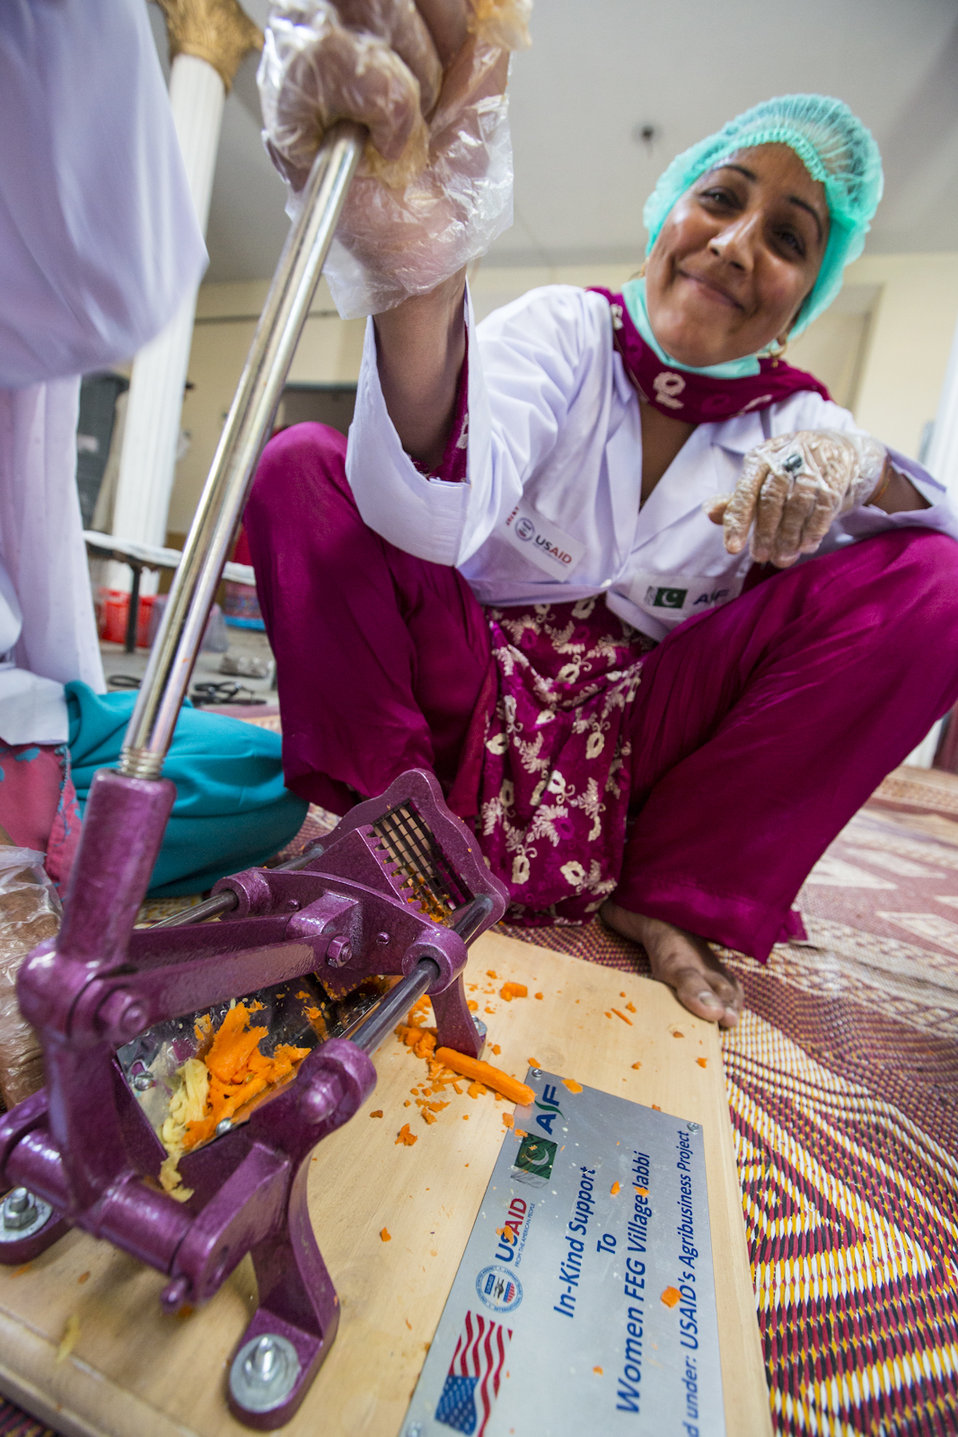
USAID's Agribusiness Project Women FEG for Food Processing - Pickle Production at Village Jabbi

Some of the women had heard of USAID, but never thought that they could benefit from a USAID grant.
www.usaid.gov/pk/db/sectors/growth/project 750.html